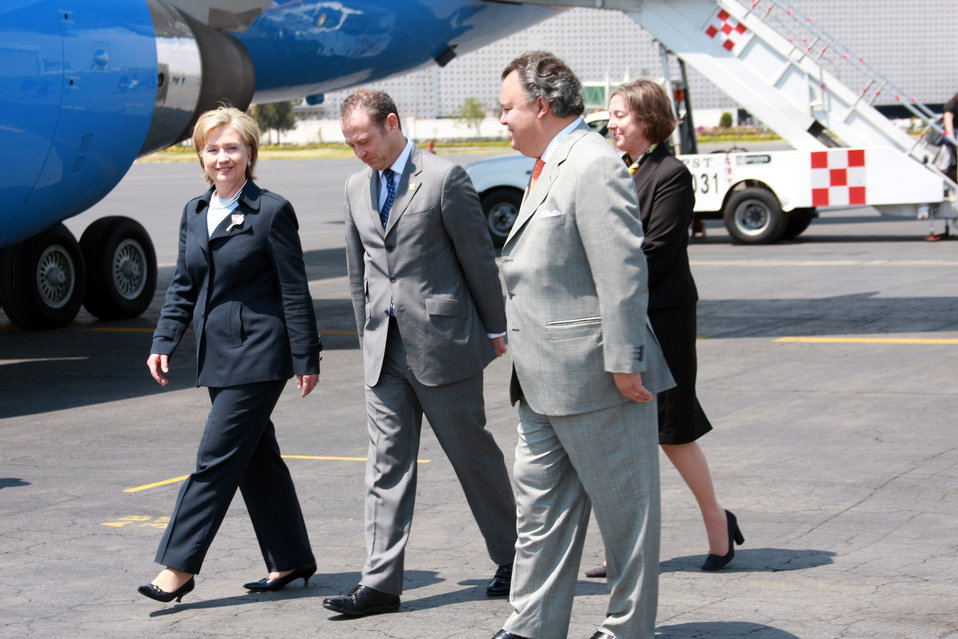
Secretary Clinton at U.S. Arrives in Mexico City

U.S. Secretary of State Hillary Rodham Clinton arrives in Mexico City and is greeted by Mexico's Ambassador to the U.S. Arturo Sarukhan, Ambassador Francisco del Rio, Director of Protocol, and Charge d'Affaires Leslie Bassett, March 25,2009.